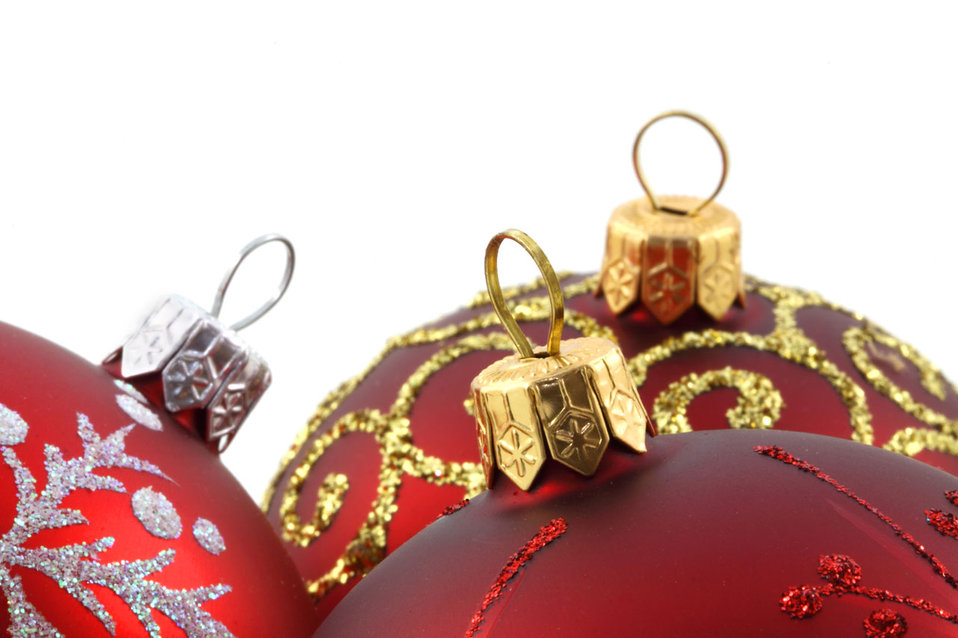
Christmas baubles

Top of three christmas baubles.